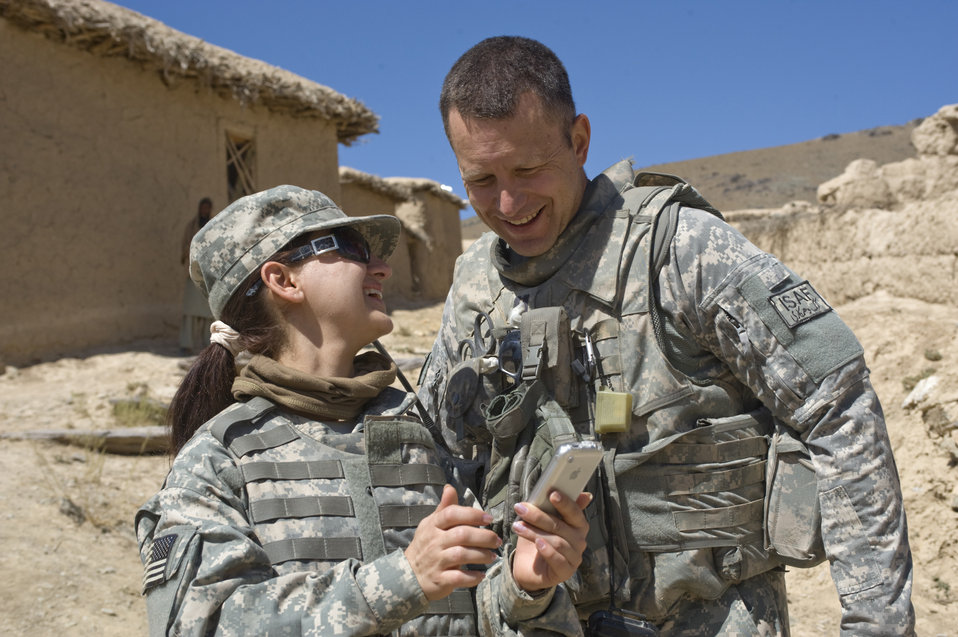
PRT strives to build relationships in remote village

Molly, an interpreter, shares photos she took of village children with Capt. Marshall Fiscus. The team traveled to Pacha Hawk to provide offer a medical clinic for residents. The joint-service team has members from the Air Force, Army and Navy assigned to it. Captain Fiscus is a Kapisa and Parwan Provincial Reconstruction Team medical professional.